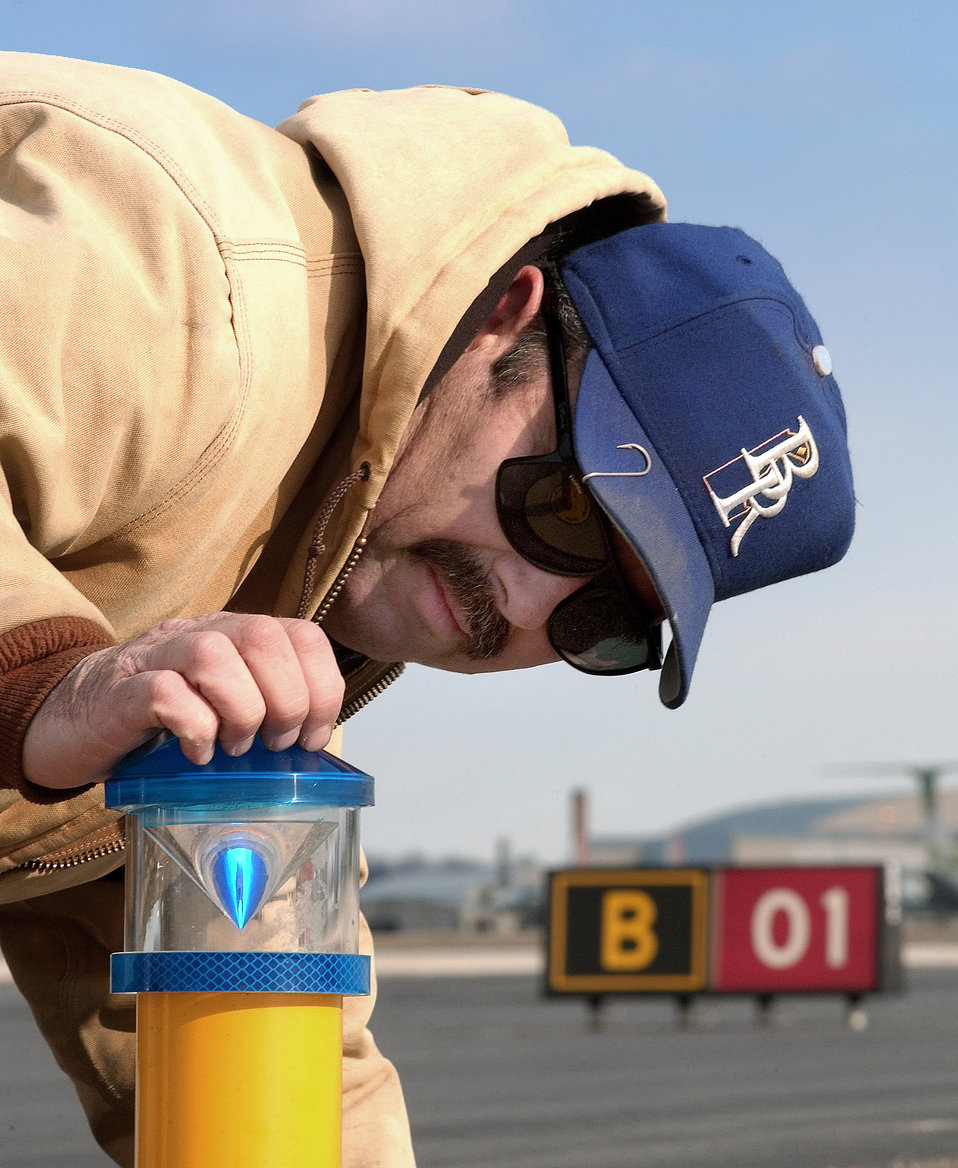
Lights of Dover

DOVER AIR FORCE BASE, Del. -- Dennis Major inspects new lights on the taxiway here. Dover is one of two Air Force installations using new diode lights that use less electricity than older models and are brighter. By design, an aircraft can hit a light and the tube will snap off the base, but the lighting unit itself will not be affected. Major works for the base's 436th Civil Engineer Squadron.